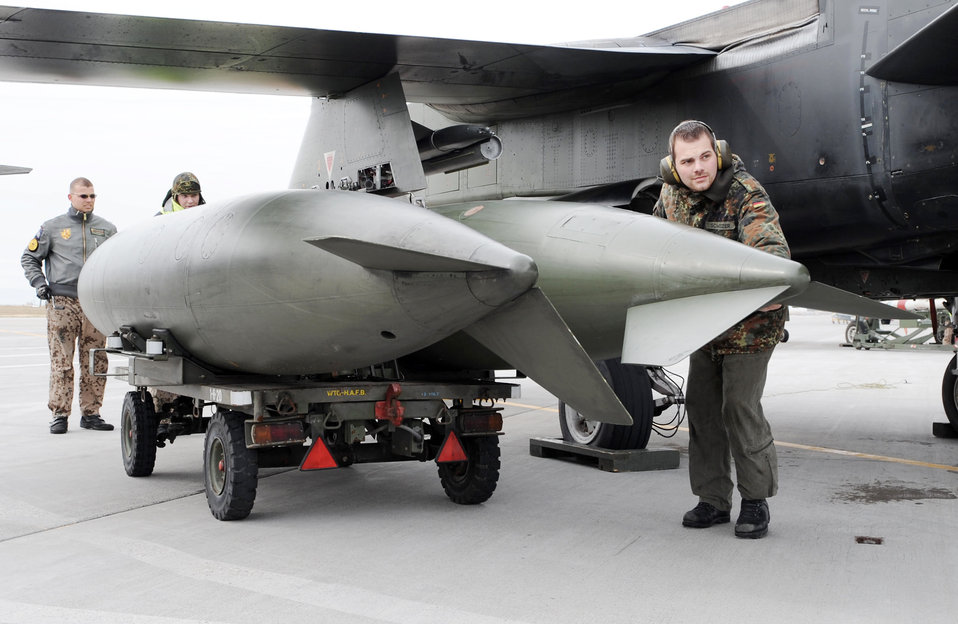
Exercise Mountain Roundup

Staff Sgt. Martin Schweizer, a weapons journeyman from the German air force Flying and Training Center at Holloman Air Force Base, N.M., helps perform post-flight maintenance on a PA-200 Tornado Oct. 21, 2009, during the Mountain Roundup exercise at Mountain Home AFB, Idaho. Mountain Roundup is a large-force exercise running from Oct. 15 through Oct. 30 and includes participants from the German air force, U.S. Air Force, U.S. Navy and U.S. Marines.